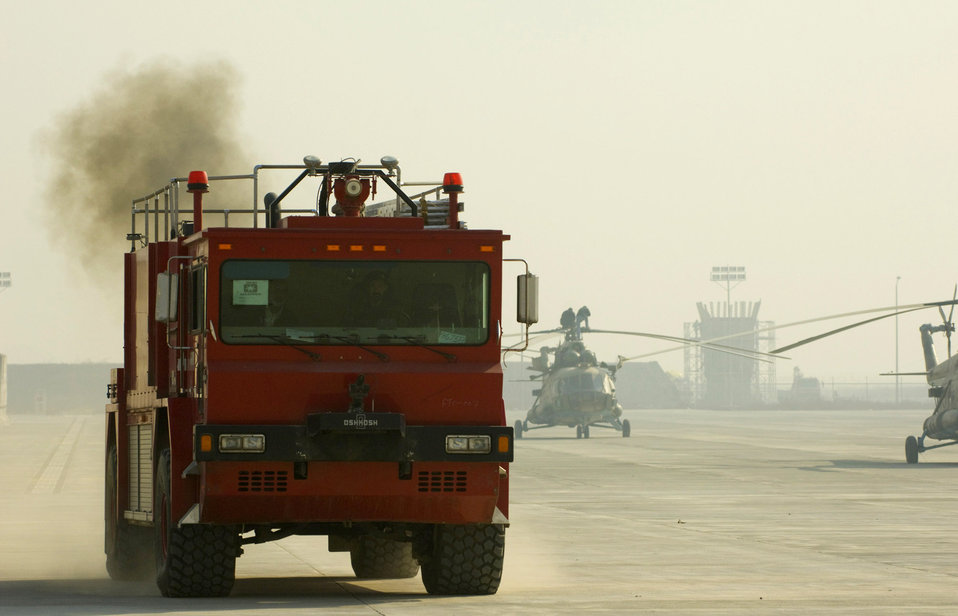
Airman helps shape future Afghan firefighters

Afghan National Army Air Corps firefighters train on driving the Osh Kosh fire truck on the flightline at Kabul International Airport, Afghanistran. The ANAAC received seven of the fire trucks recently, which will be distributed to several bases around Afghanistan.